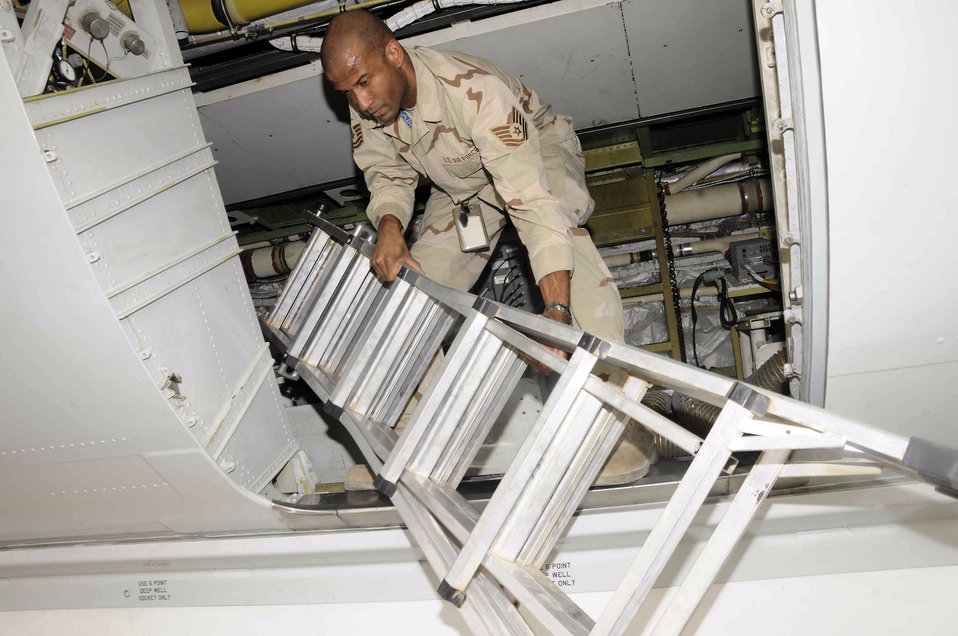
J-STARS total force cooperation helps save lives

Tech. Sgt. Kevin Reid performs maintenance on a plane in Southwest Asia May 19. Sergeant Reid is a Joint-STARS crew chief.